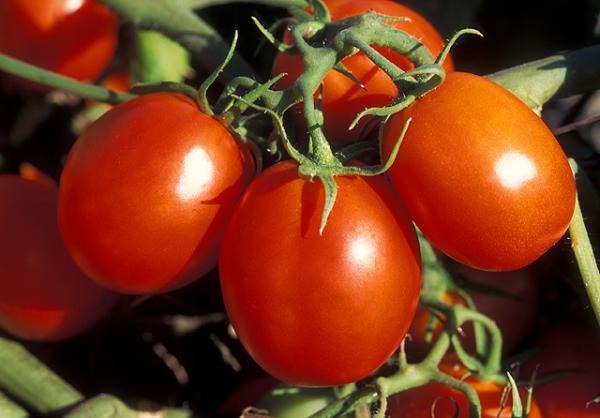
Tomatoes

U.S. Department of Agriculture (USDA) Agricultural Research Service (ARS) scientists have sequenced the genome of the domesticated tomato, such as vine ripening tomatoes on June 5, 2012. Genome sequencing has the potential to improve the tomato’s taste, health and nutrition benefits.